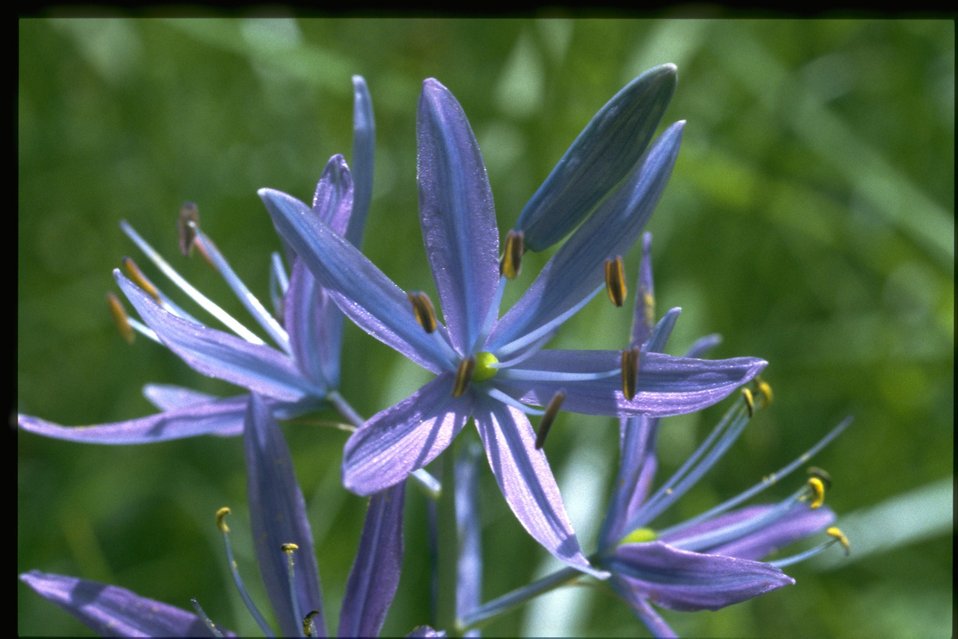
Closeup shot of Camassia quamash.